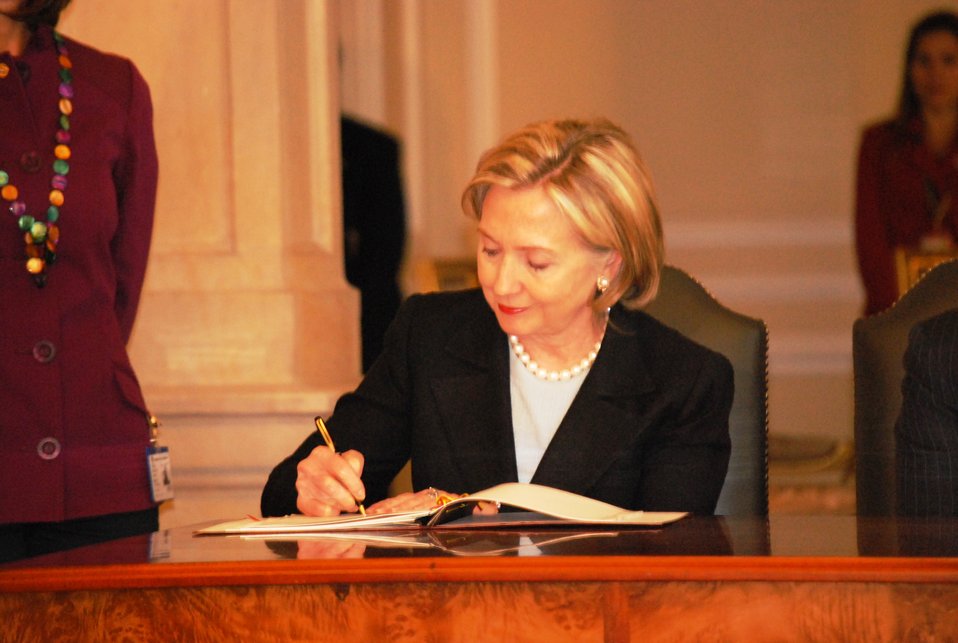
Secretary Clinton and Colombian Foreign Minister Sign Science and Technology Agreement

U.S. Secretary of State Hillary Rodham Clinton signs an agreement with Colombian Foreign Minister Jaime Bermudez that will expand cooperation on science and technology between the United States and Colombia in Bogotá, Colombia, on June 9, 2010.